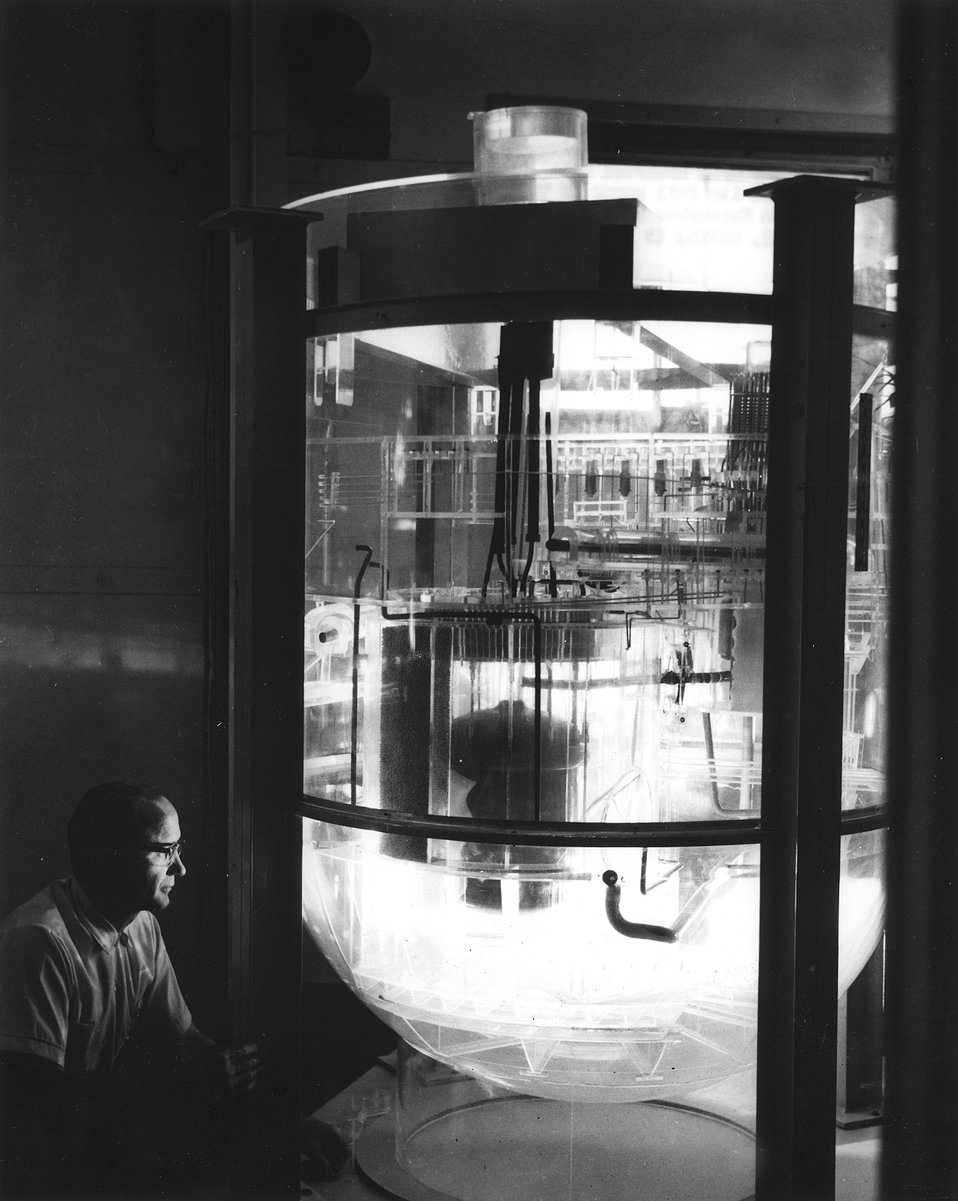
One-sixth scale model of Oak Ridge National Laboratory's Molten Salt Reactor Experiment -- The MSRE achieved critically June 1, 1965, and reached its full power of 7,500 kilowatts in May 1966. c. 1968